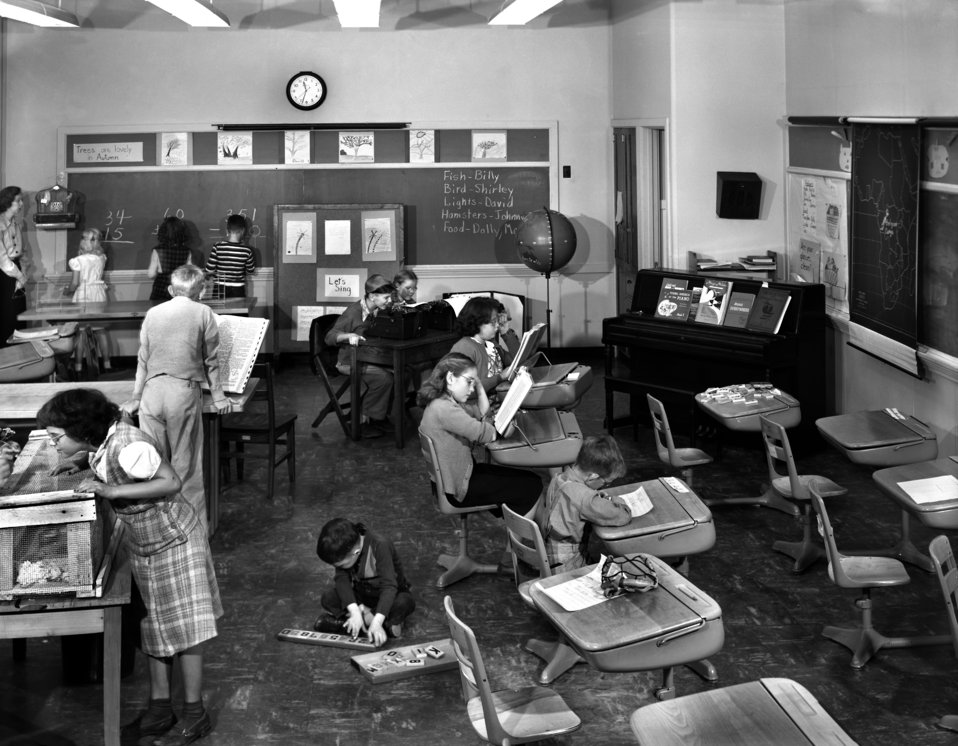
Cedar Hill School 'Light-Saving Room' Lions Club Oak Ridge 1948

5267-7 DOE photo Ed Westcott 10-1948 Oak Ridge Tennessee